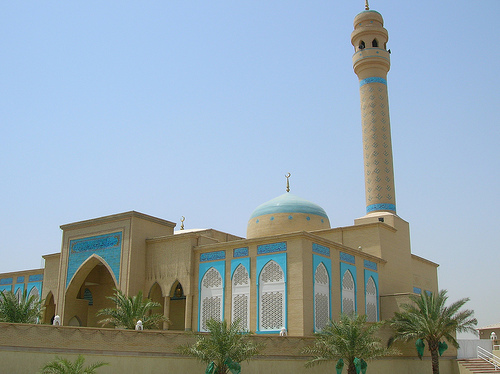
العربية: مسجد أبي الفضل العباس - الكويت - صباح السالم ترخيص: Template:قالب:نقل إلى كومنز